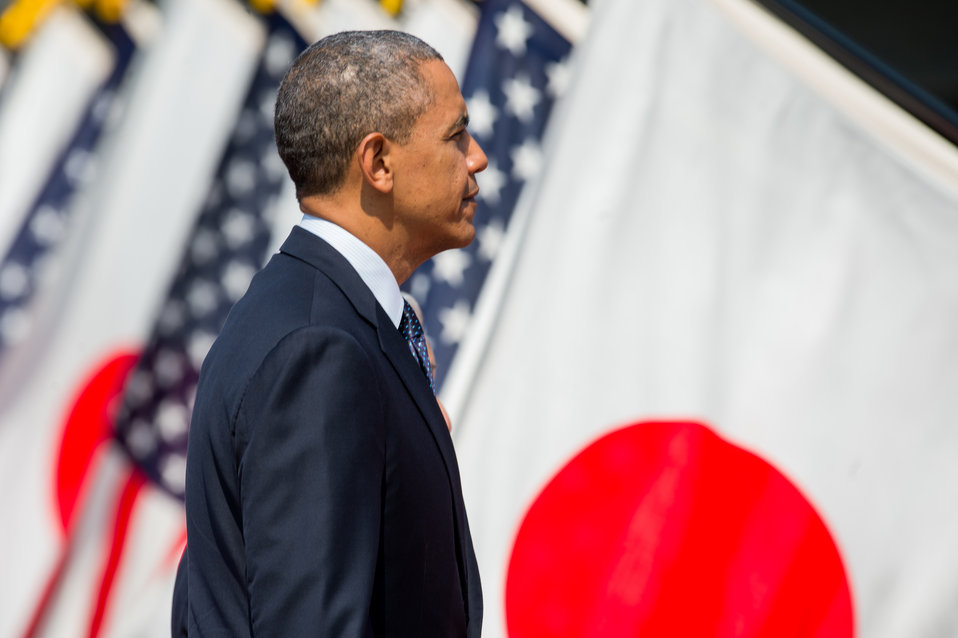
President Obama at the Welcome Ceremony in Japan

U.S. President Barack Obama participates in the welcome ceremony at the Imperial Palace during his state visit to Tokyo, Japan, on April 24, 2014.